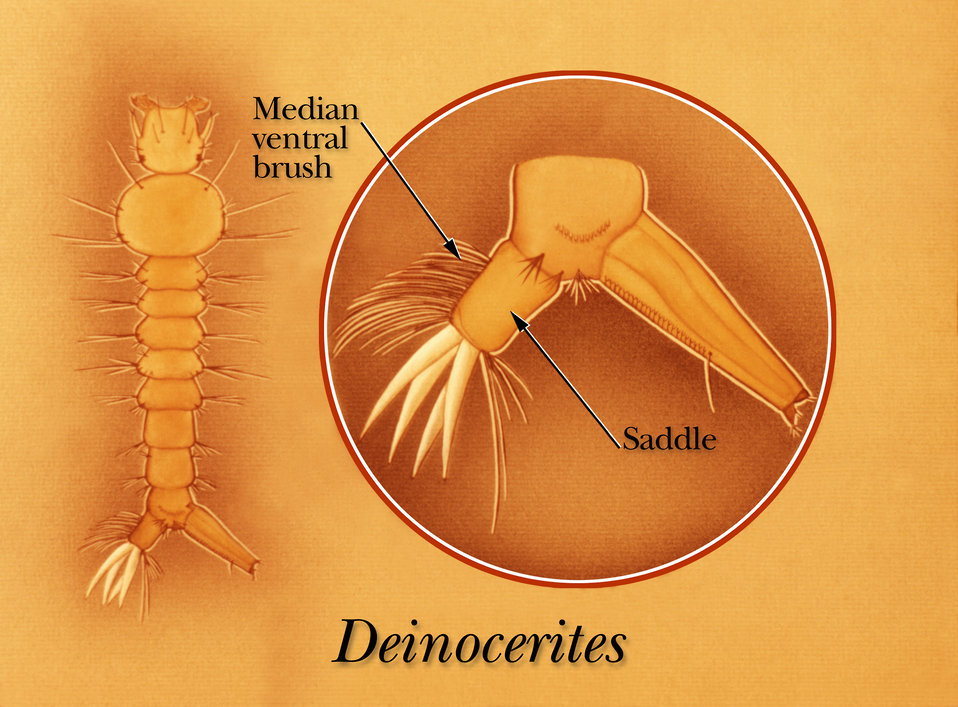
An illustration identifying the saddle and median ventral brush of a Psorophora mosquito larva.